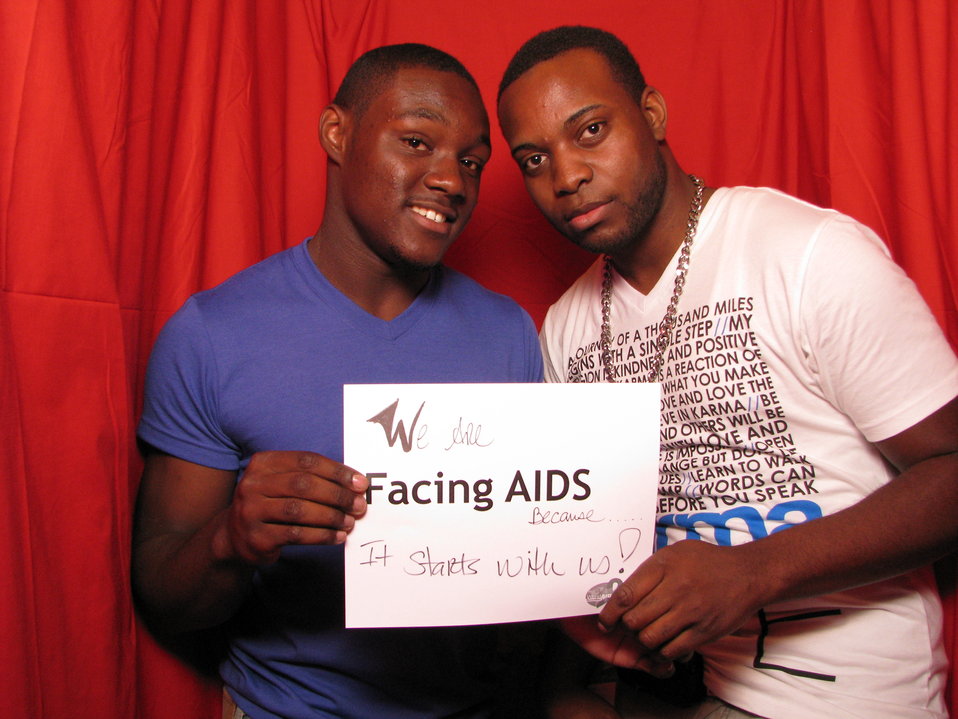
We are FACING AIDS because it starts with us!

From the AIDS.gov photo booth at the U.S. Conference on AIDS, September 2010 (Orlando, FL).